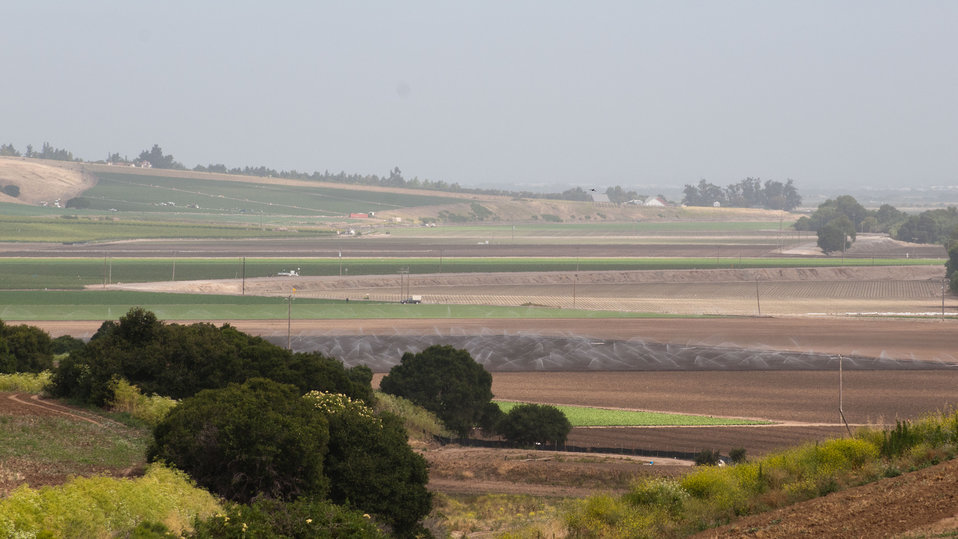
Leafy Greens (lower majority of fields seen) is operated by farmer Tom Heess, in the Salinas Valley, California on Thursday, June 16, 2011. Leafy Greens grows row crops of lettuce, broccoli, cauliflower sweet peas and seed beans. He uses rotational crop plantings to control weeds and plant disease. When a plot of land is at rest, he plants a cover crop of barley and rye grass because the roots hold the topsoil reducing erosion of the soil. He is converting his irrigation system from conventional sprinklers to micro irrigation. Where one system produces runoff and erosion of the soil; the other has little or no erosion, less maintenance, easy harvest and less water is needed. When seasonal rains produce runoff, the silt that flows with it is caught in sediment ponds. The ponds have grass, bushes and trees to hold the structure and allow the silt to settle. Spillways lead to holding ponds and eventually the Salinas River (far right row of trees), a tributary to the Monterey Bay National Marine Sanctuary. So far, because of its design and efficiency, no water has made it to the river.